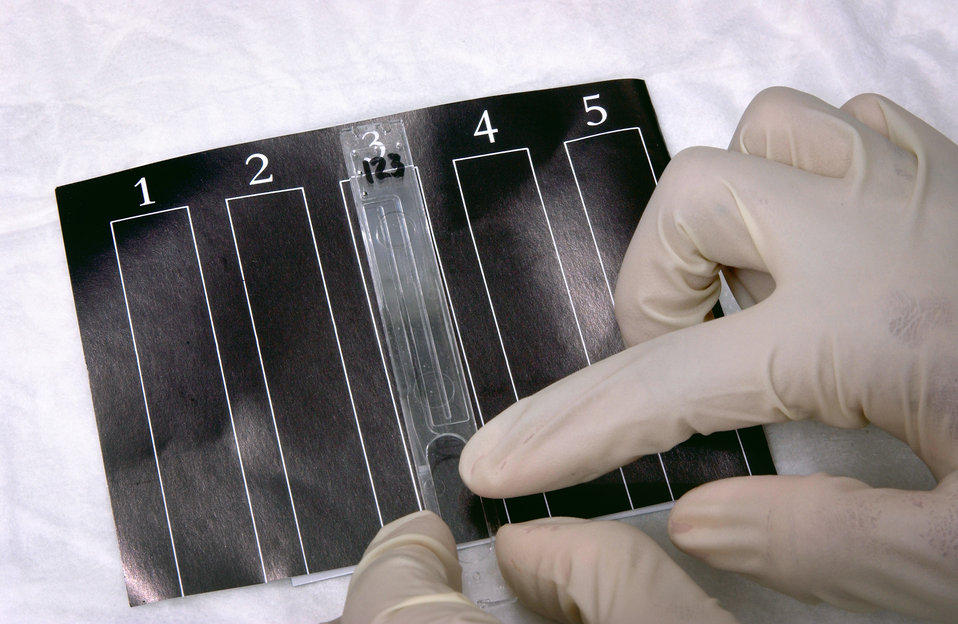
Place the CAPILLUS� HIV-1/HIV-2 Rapid Test capillary slide on the black interpretation card right side up. (Step 3 of 12)